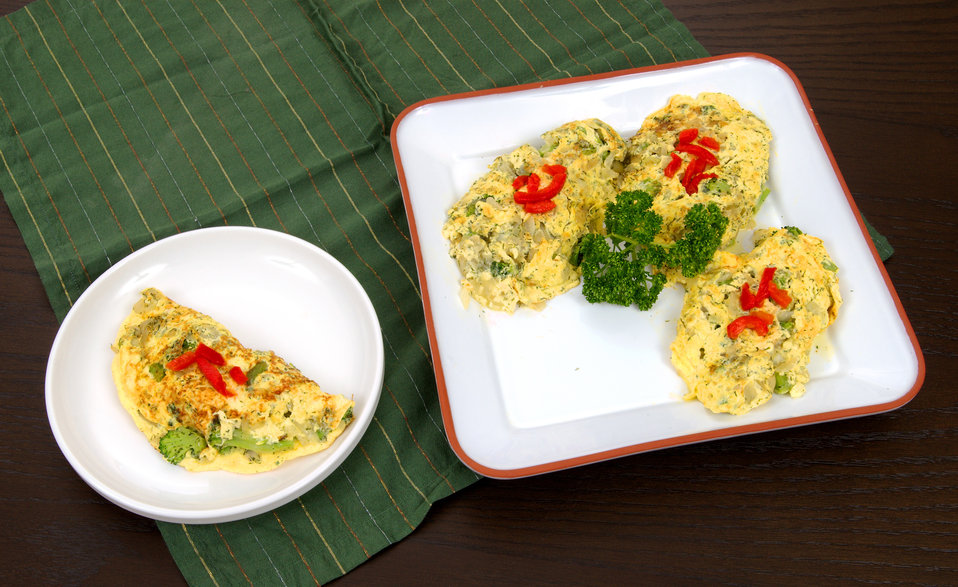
This image depicts a plate of Broccoli Frittatas, from which a single frittata had been removed, and plated on its own small serving dish.